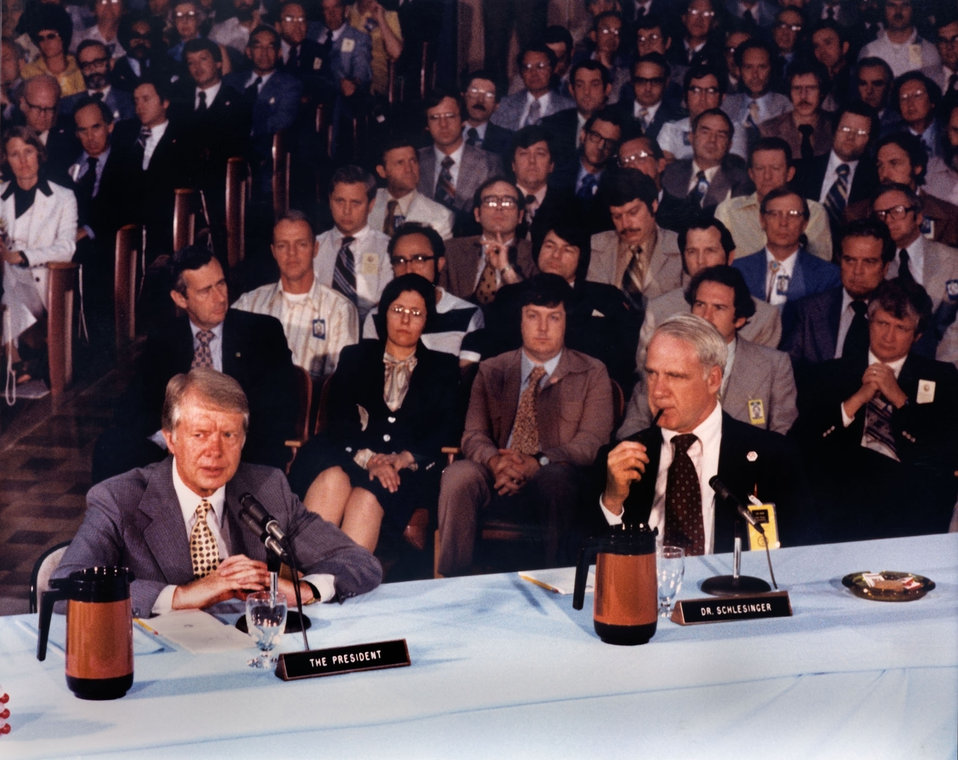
President Carter

President Jimmy Carter and Secretary of Energy James Schlesinger in a meeting in Oak Ridge, Tennessee (1978).